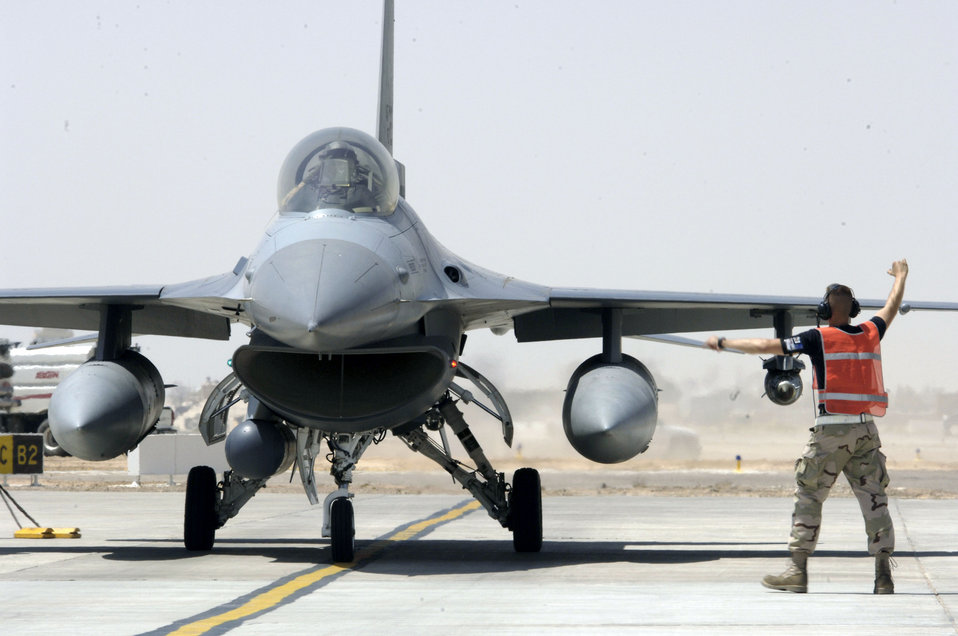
Falcon in the desert

A crewmember marshals an F-16 Fighting Falcon into place for final checks before a mission in support of Operation Iraqi Freedom at Balad Air Base, Iraq, on July 11.